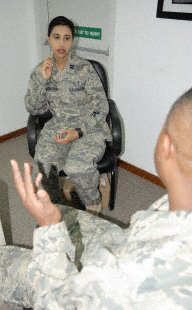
Taking care of the troops

Capt. (Dr.) Kieran Dhillon-Davis, 380th Expeditionary Medical Group mental health chief and clinical psychologist, talks with an Airman Jan. 22, 2010, during operations at an air base in Southwest Asia. She is deployed from the 82nd Medical Operations Squadron at Sheppard Air Force Base, Texas.